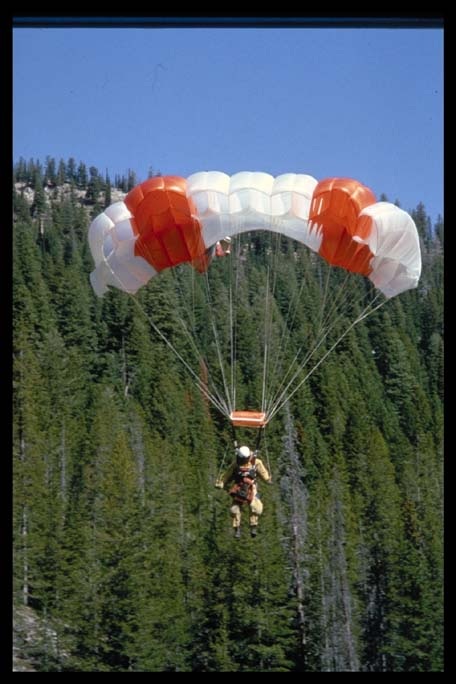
Smokejumper